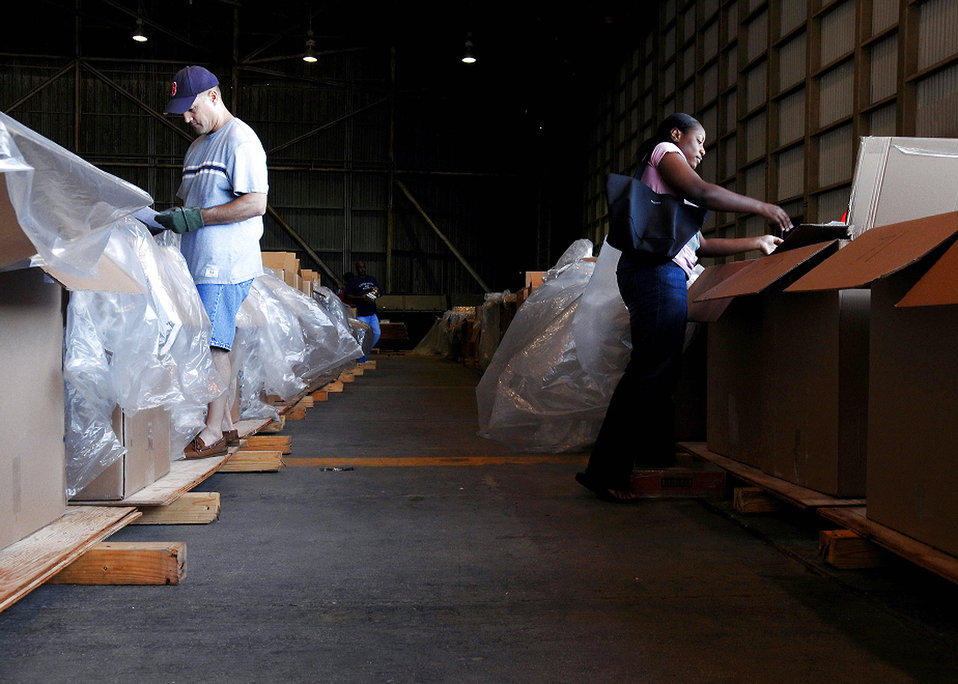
Operation Christmas Drop Holds Final Box Build

Chief Master Sgt. James Cornell (left) and Staff Sgt. Lishey Brown pack boxes for Operation Christmas Drop 2008 at Andersen Air Force Base, Guam. The organization has received ten of thousands of donations and more than $30,000 in sponsorships. Chief Cornell is the 36th Maintenance Group Superintendent. Sergeant Brown is assigned to the 36th Force Support Squadron retirements and separations section.